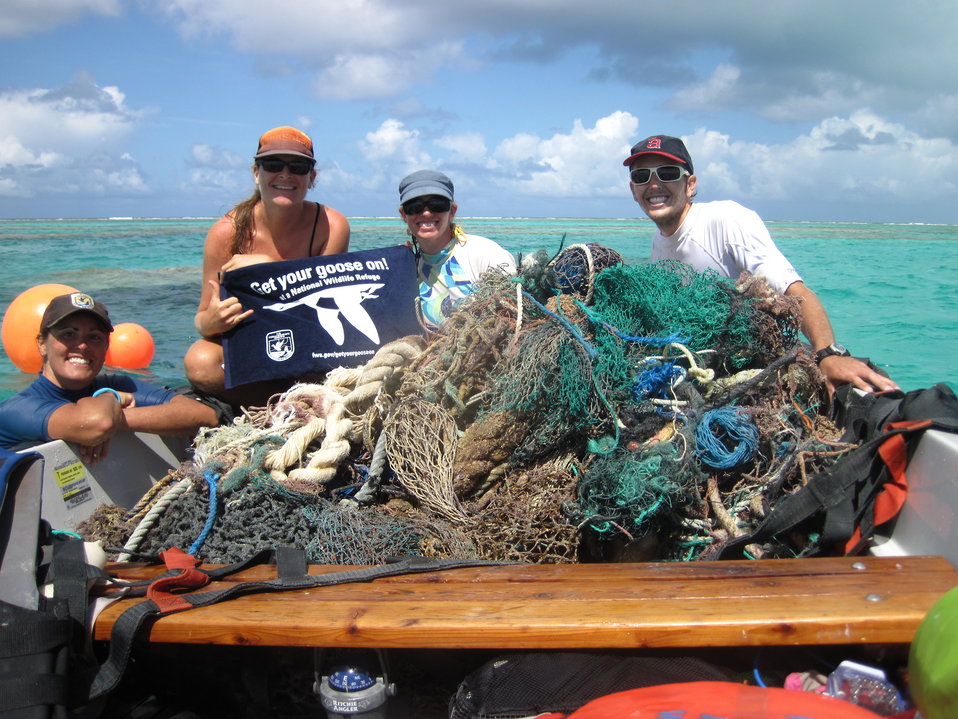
Team Tern Gets Their Goose On!

Meg Duhr, manager at Tern Island, French Frigate Shoals, Hawaiian Islands NWR, Papahanaumokuakea Marine National Monument, and volunteers doing some marine debris removal from the coral reef in French Frigate Shoals, Hawaiian Islands NWR.